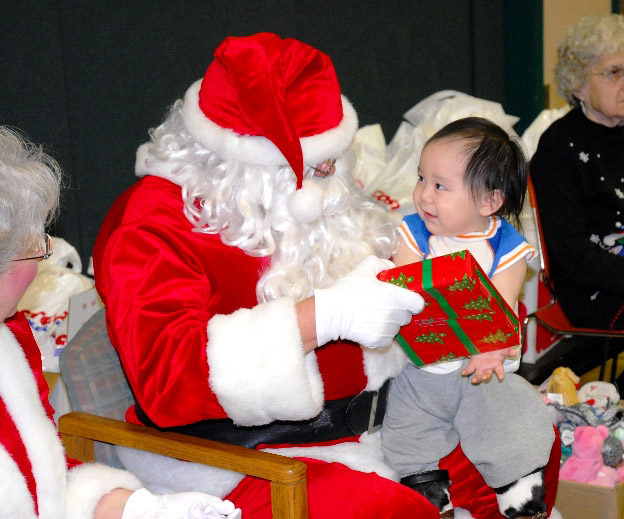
Alaska Guard conducts Operation Santa Claus

Richard Nashoalook of Wainwright, Alaska, smiles as he receives a gift from Santa Claus during Operation Santa Claus Nov. 26. The Alaska National Guard program delivers school supplies, presents and Santa Claus and Mrs. Claus to rural villages across the state.